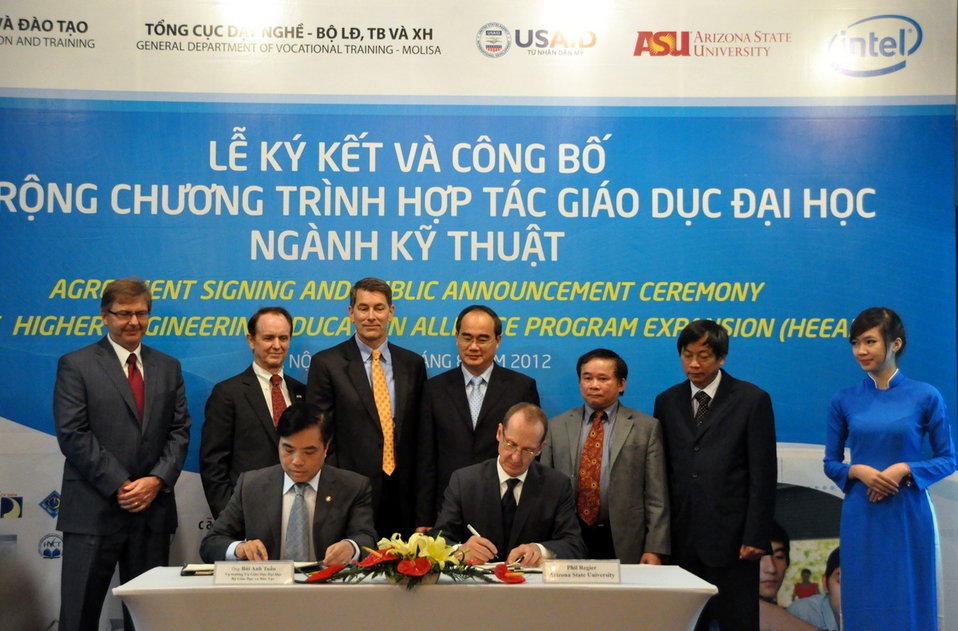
Higher Engineering Education Alliance Program Expansion Launch

Hanoi, August 20, 2012.